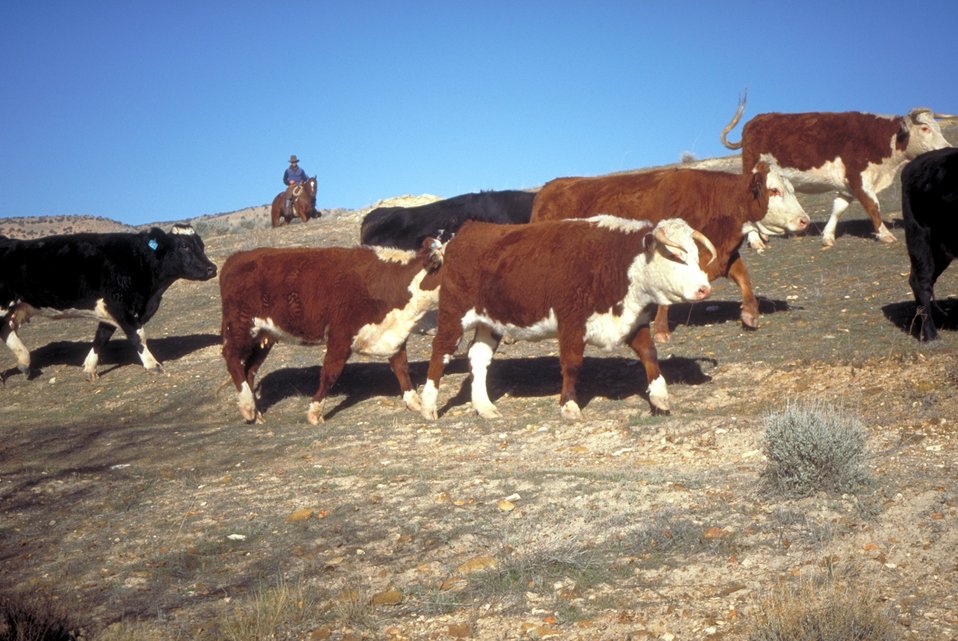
Working cowboys living near Vernal, Utah.